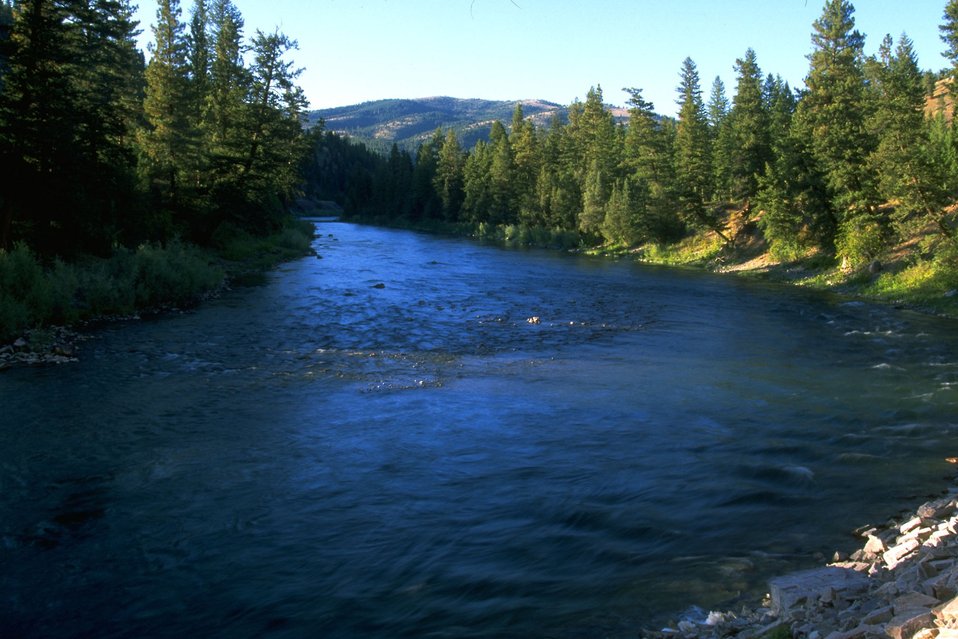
Scenic shot of Blackfoot River